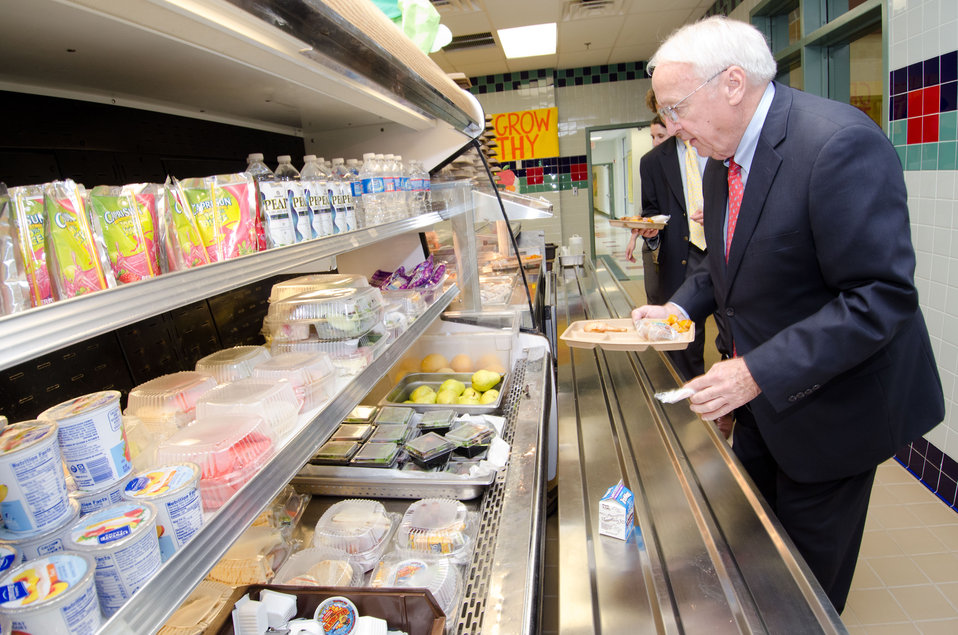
After students had their lunches, Under Secretary for Food, Nutrition and Consumer Services Kevin Concannon made his lunch choices and paid for his meal, during a National School Lunch Week event at Nottingham Elementary School in Arlington, VA, on Wednesday, October 12, 2011. (The schedule and menu were not altered for the event). Today's menu included roasted chicken, roasted butternut squash with dried cranberries, farm fresh mixed lettuce salad, turkey wraps, pita wedges, hot muffins, carrots, Asian pears and more.